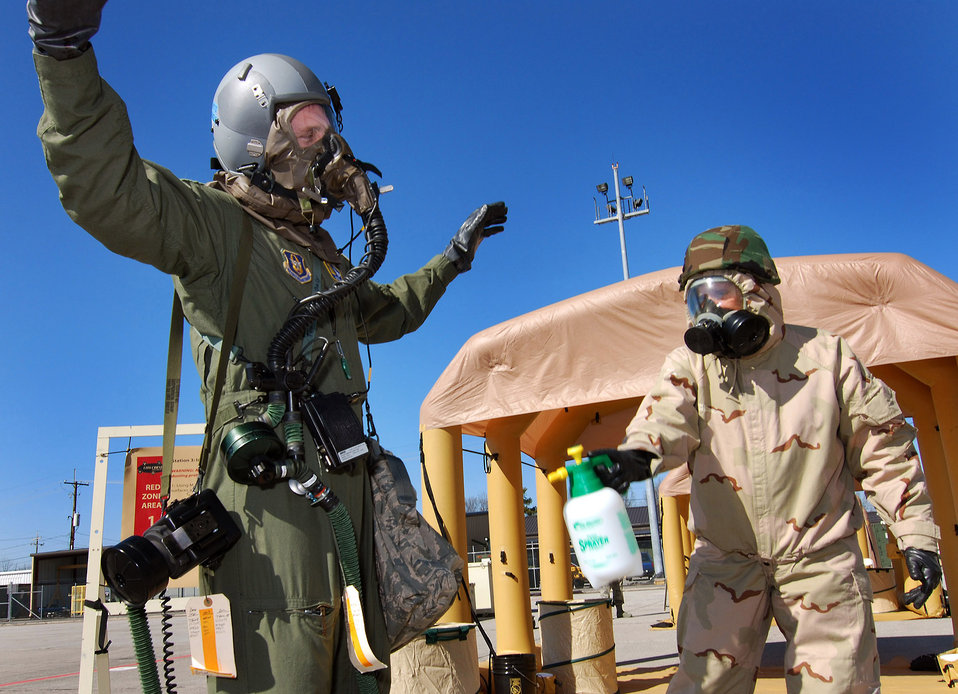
Aircrew Decontamination Training

Tech. Sgt. Lance Wilson (right) simulates spraying a neutralizing agent on 1st Lt. Seth King during decontamination training Feb. 6, 2011 at Dobbins Air Reserve Base, Ga. Sergeant Wilson is an aircrew flight equipment technician. Lieutenant Croasdale is a 700th Airlift Squadron pilot.